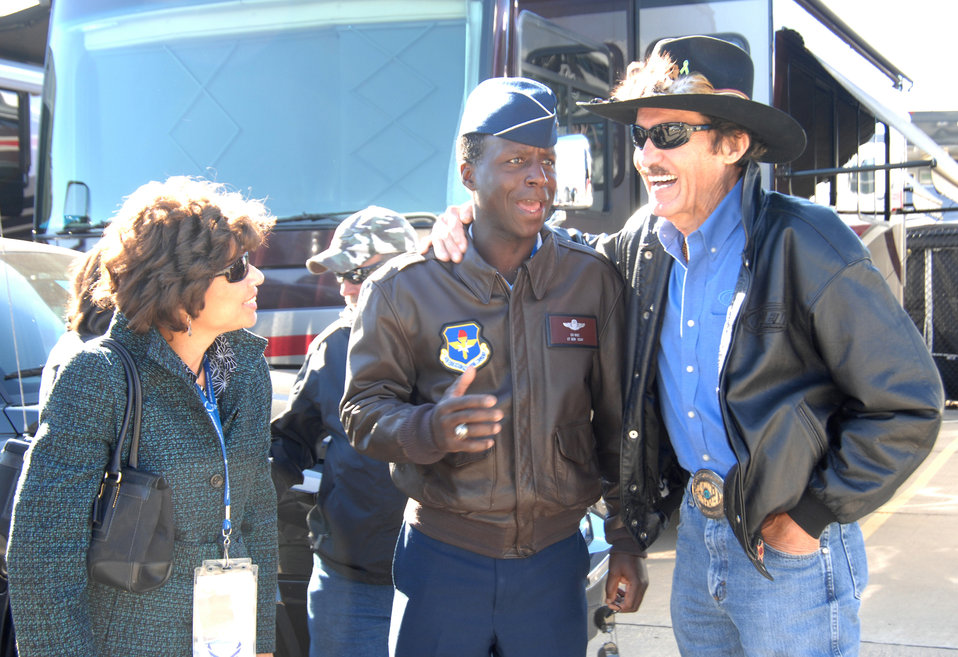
General Rice at Texas Motor Speedway

Lt. Gen. Edward A. Rice Jr., incoming commander of Air Education and Training Command, and his wife, Teresa, speak with NASCAR legend Richard Petty at the Texas Motor Speedway Nov. 7, 2010, before the NASCAR Sprint Cup Series race. The general, who has been confirmed for his fourth star, conducted a swearing-in ceremony for Delayed Enlistment Program members, and met members of the Air Force's No. 19 NASCAR team.